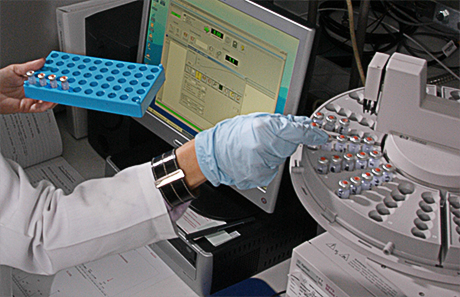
IRP equipment